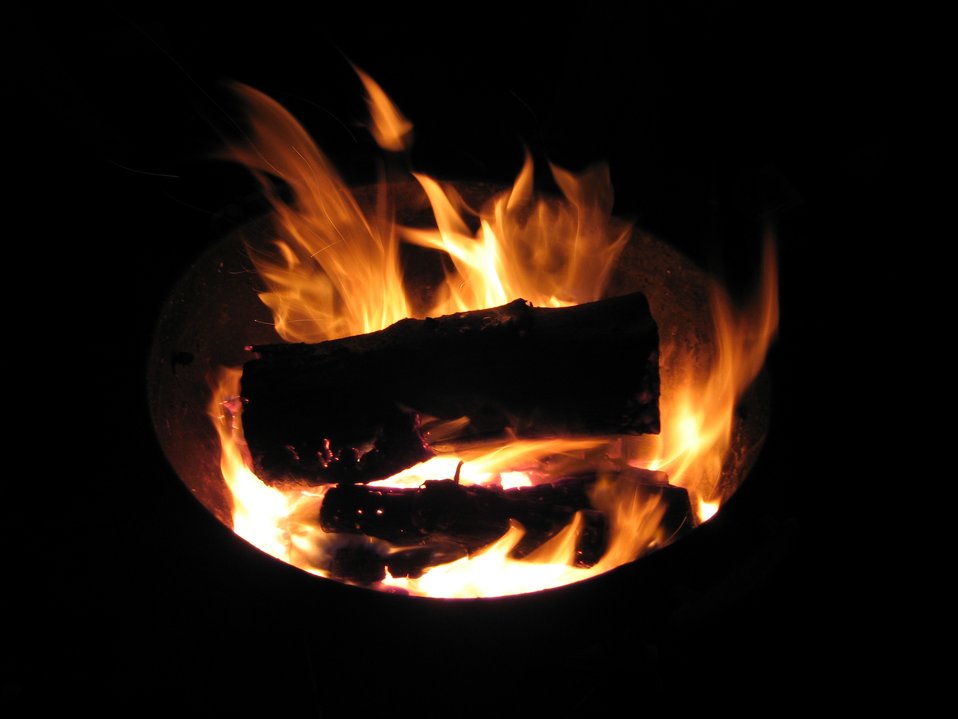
Campfire at Geographic Harbor